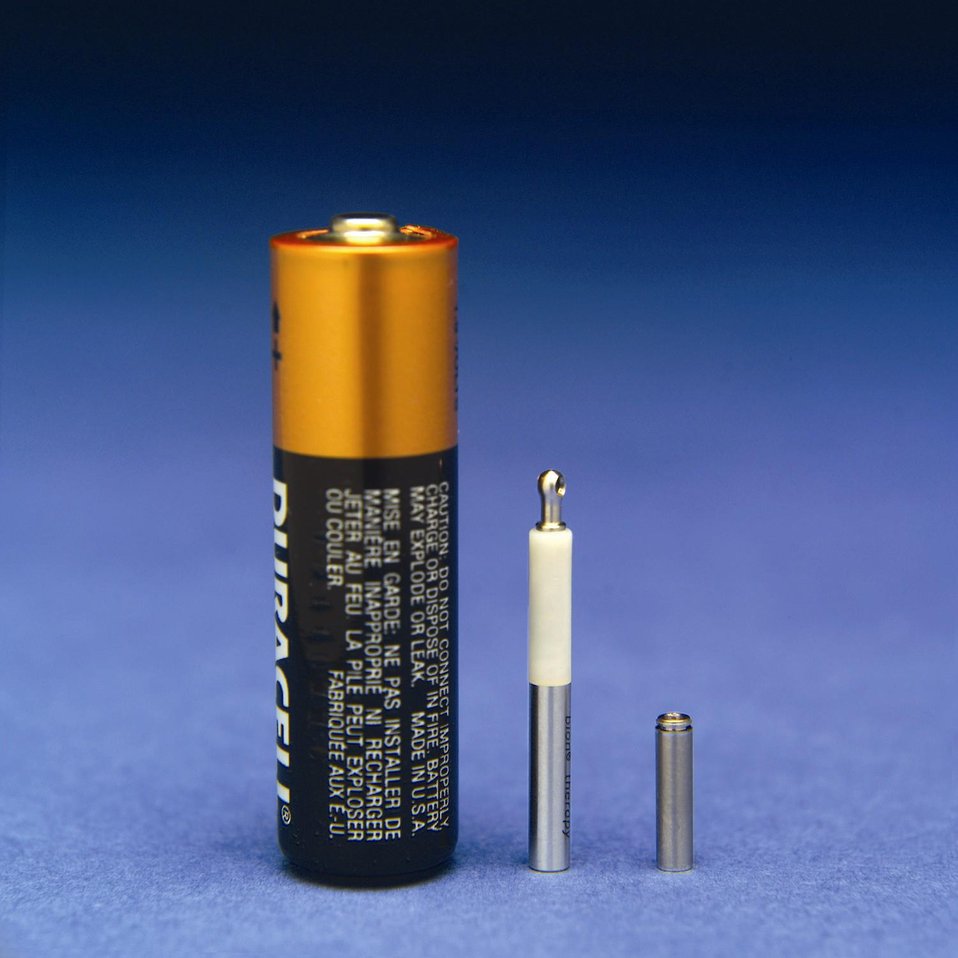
A COMMERCIAL AA BATTERY, A BION, AND A MINIATURE BATTERY.

BIONIC NEURON DEVICES OR BIONS CAN BE IMPLANTED NEAR NERVES WHERE THEY EMIT ELECTRICAL MICRO-PULSES THAT STIMULATE NEARBY MUSCLES AND NERVES TO HELP SUFFERERS OF ATROPHIED OR DYSFUNCTIONAL MUSCLES. DEVELOPERS INCLUDE ARGONNE, QUALLION LLC AND ADVANCED BIONICS CORP. THE MINIATURE BATTERY USED IN THE BION IS 100 TIMES SMALLER THAN AN AA BATTERY. THE KEY TO THE BATTERY'S SUCCESS IS AN ADVANCED LITHIUM-ION CHEMISTRY.